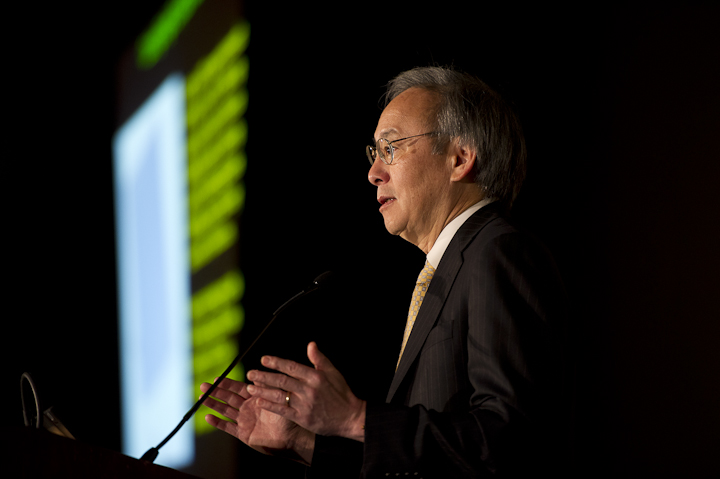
Energy Secretary Steven Chu at SunShot Grand Challenge

June 13, 2012- Steven Chu, Secretary of Energy, U.S. Department of Energy gives the keynote address at the SunShot Grand Challenge Summit and Technology Forum in Denver, Colorado.